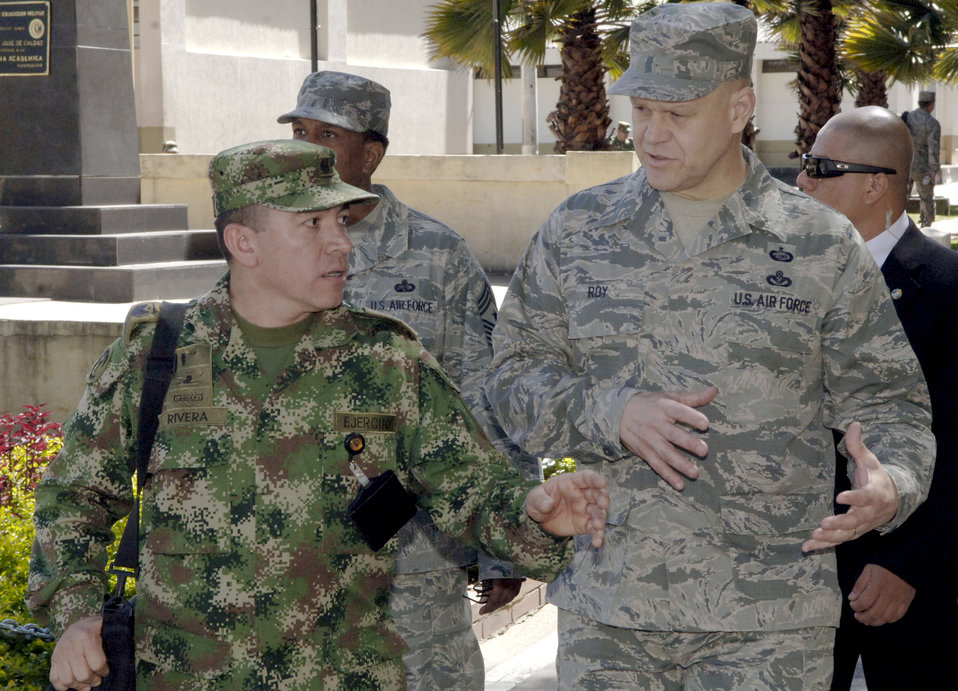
Chief Roy

Chief Master Sgt. of the Air Force James A. Roy (right) asks questions about the Colombian Sergeants Major Academy during a tour of the facility by Master Sgt. Rivera (left) of the Colombian army, Feb. 3, 2011, in Bogota.